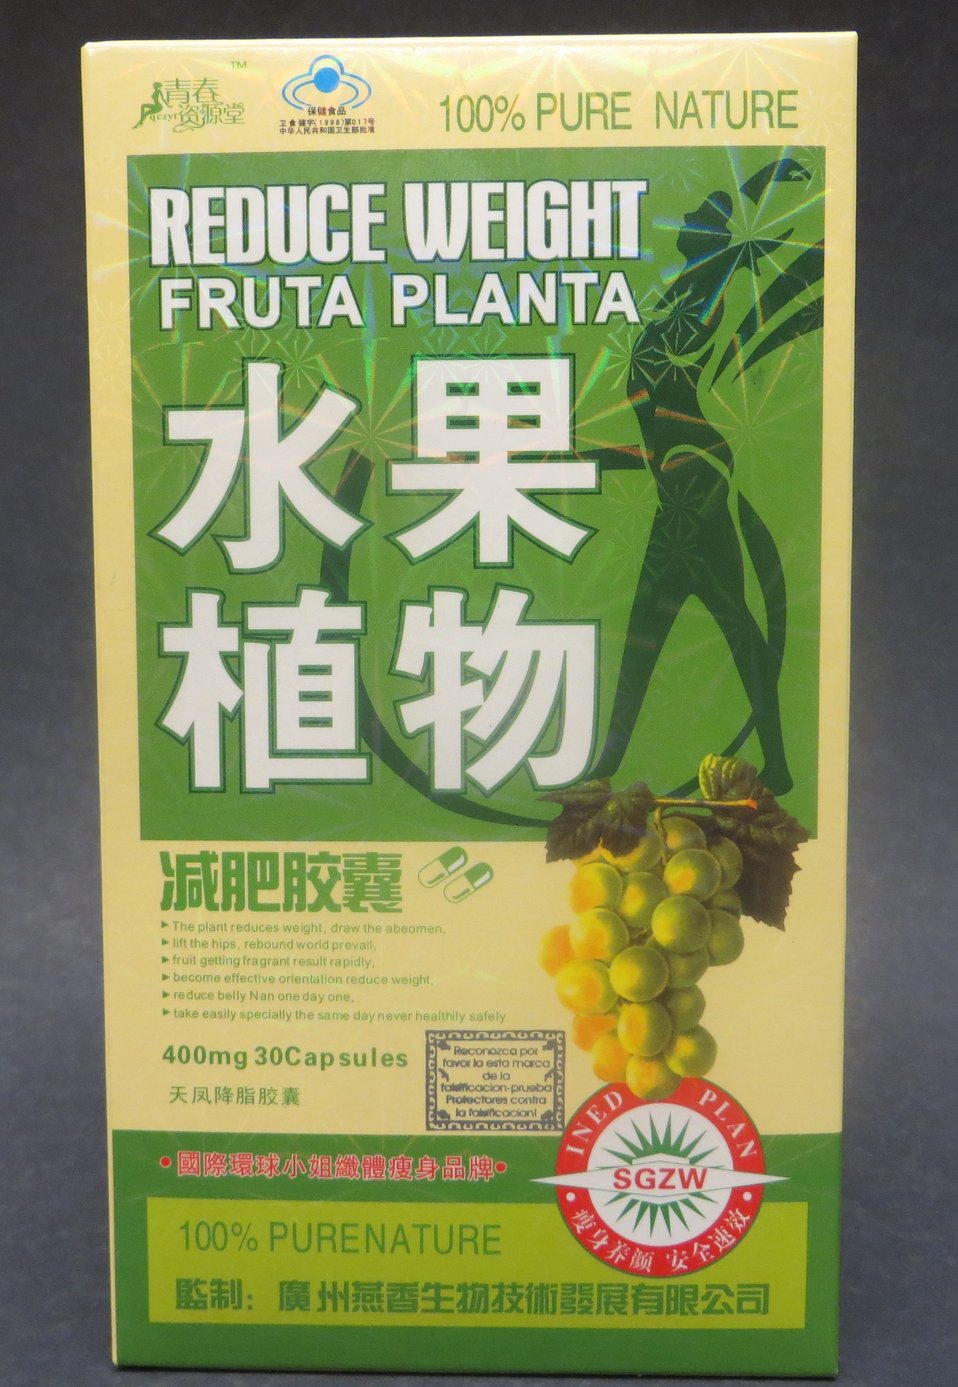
Reduce Weight Fruta Planta

February 4, 2014 - The FDA is advising consumers not to purchase or use Reduce Weight Fruta Planta, a product promoted and sold as a dietary supplement for weight loss. The product was found to contain undeclared phenolphthalein.